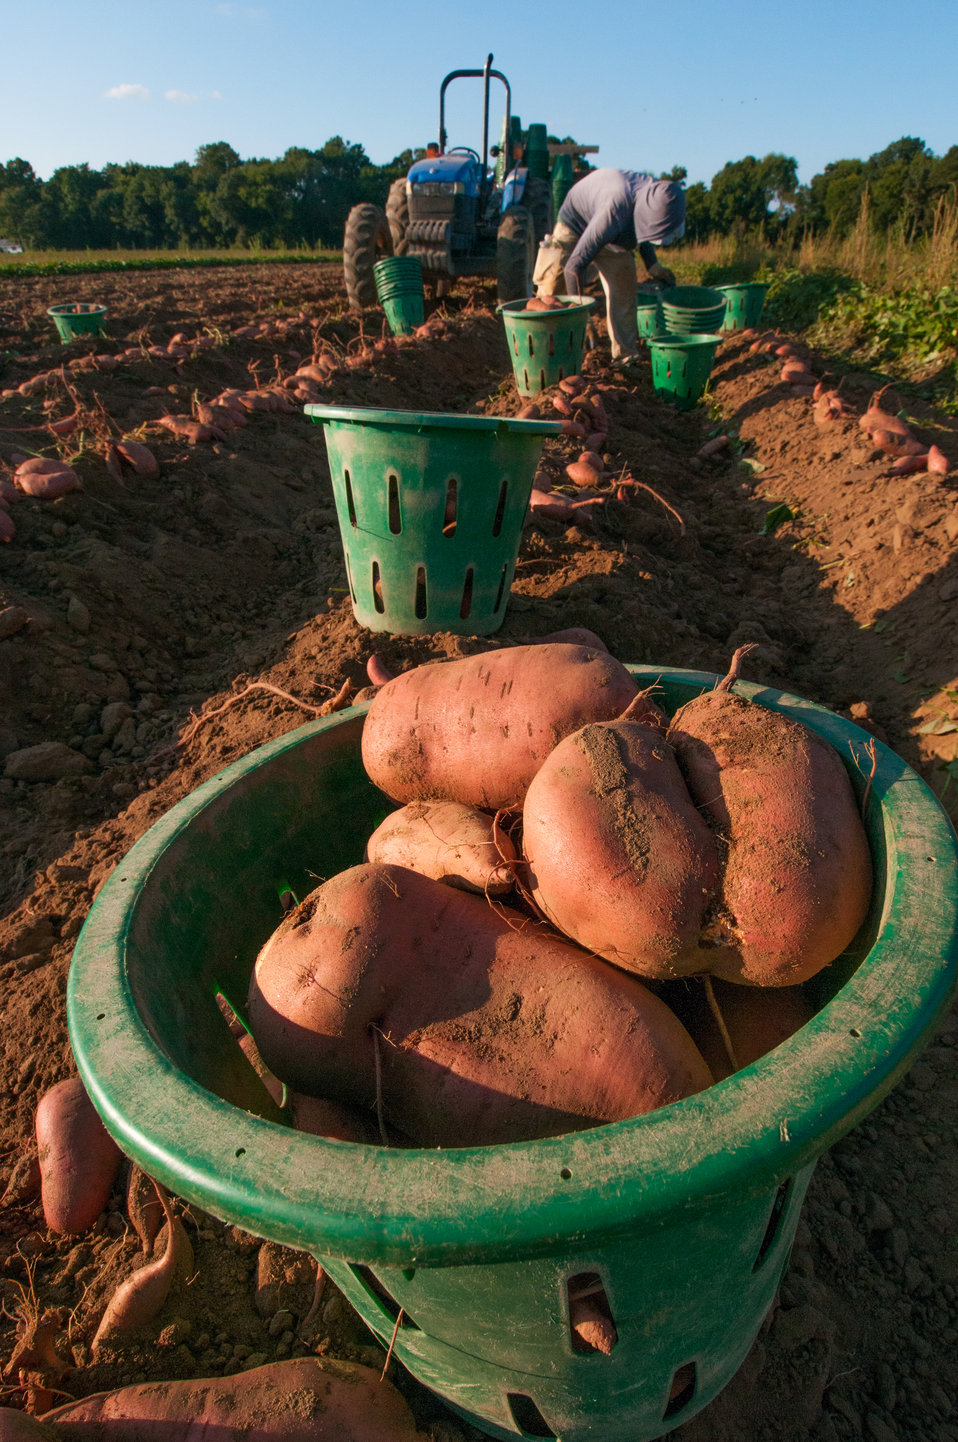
Large sweet potatoes are ploughed up for migrant workers to pick and sort according to size at Kirby Farms in Mechanicsville, VA on Sep. 20, 2013. Kirby Farms is a third-generation family farm that covers 500 acres, and generates produce and grains on a year-around operation. Please see the photoset description for more information about this farm operation.